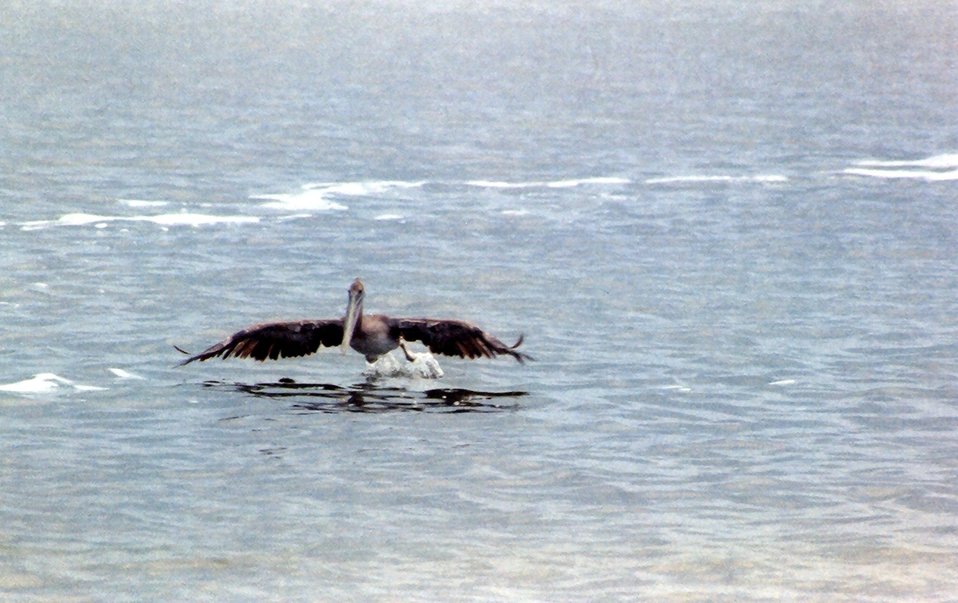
Pelican over Albemarle Sound. This is possibly as graceful as a pelican can appear.